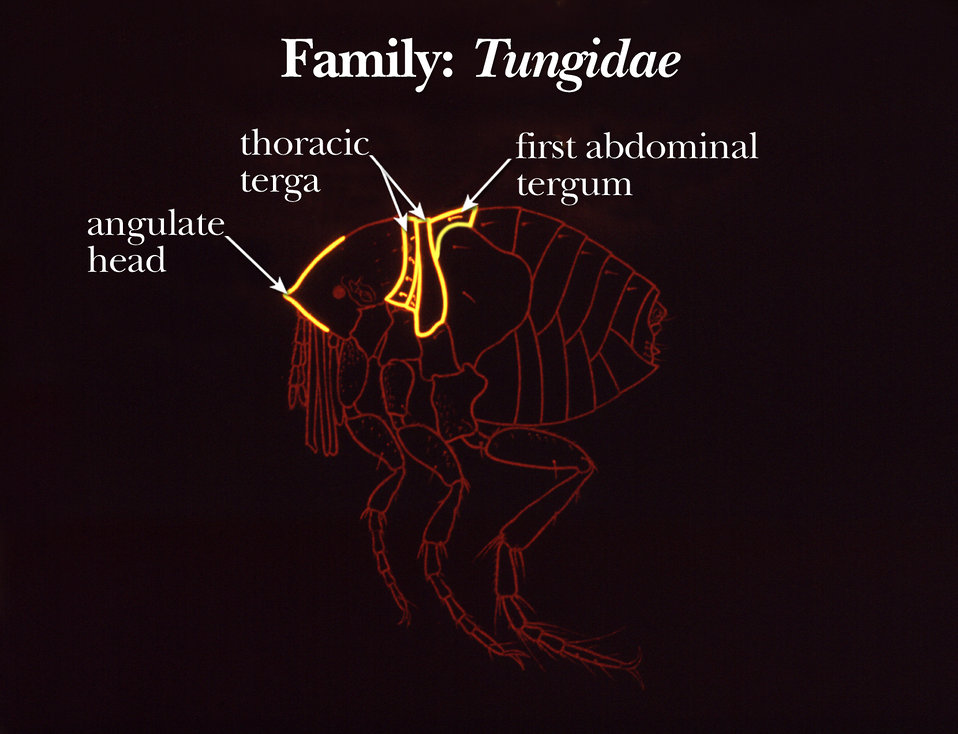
This illustration shows a few of the identifying morphologic characteristics of some of the fleas in the family Tungidae.